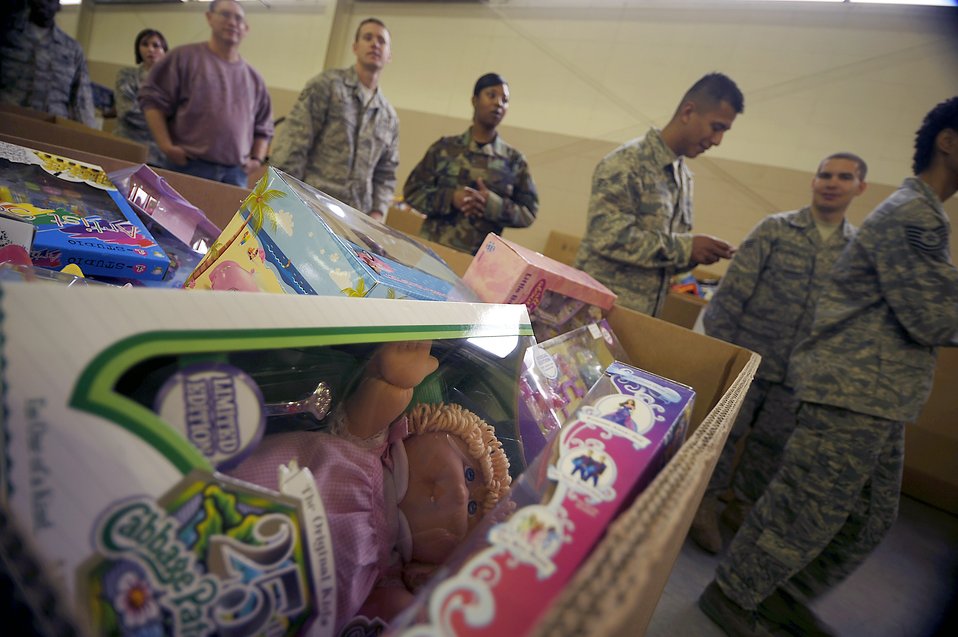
Operation Toy Drop

Airmen and Soldiers from Fort Bragg, N.C., collect and sort toys donated Dec. 5 during Operation Toy Drop at Pope Air Force Base, N.C. Operation Toy Drop is an annual Airborne jump at Fort Bragg in its 11th year hosted by the Army Civil Affairs and Psychological Operations Command (Airborne), and supported by Fort Braggs XVIII Airborne Corps and Pope AFB's 43rd Airlift Wing that gives Soldiers and Airmen the opportunity to help local families in need over the holidays while boosting morale and incorporating valuable training. More than 3,000 Soldiers donated a toy for a lottery ticket and the chance to jump under a foreign jumpmaster earning them their foreign jump wings. This year, German and Irish jumpmasters will be issuing the commands from C-130 Hercules aircraft during the operation.